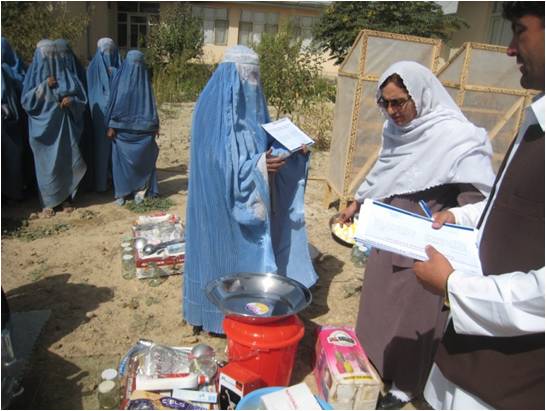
Women Empowered to Generate Income for their Families